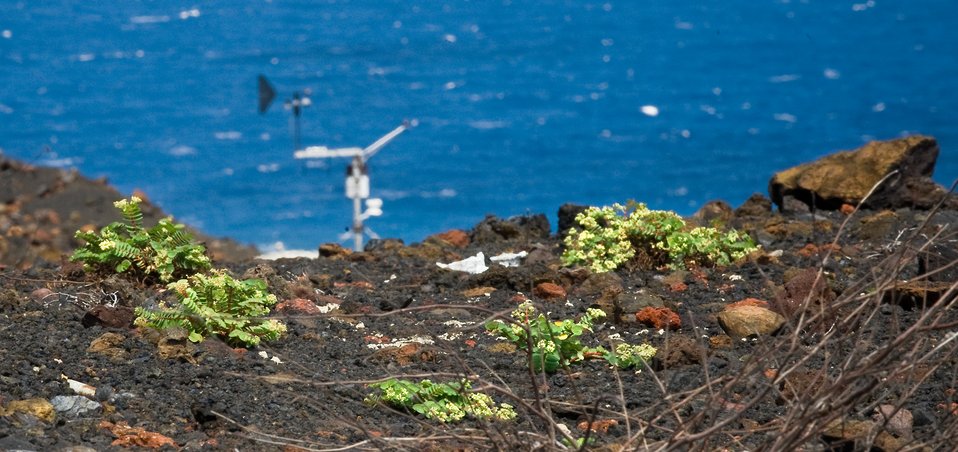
Robert's Plants

Ascension Spurge (E. origanoides), an endangered species of plant found only on the Ascension Island, predominantly on the property used by the 45th Operations Group, Detachment 2, Ascension Auxiliary Airfield (AAF), in the South Atlantic Ocean. These green leafed red stemmed plants are growing wild near a roadway hairpin turn, halfway up a hill. In the background is a weather station that records environmental conditions for the nearby spurge. Ongoing studies by the Computer Sciences Raytheon contract environmental engineering associates have taught them that this endemic plant survives best in these remote locations. Understanding the weather can help choose better locations and conditions to replant and promote growth of this small plant. Evasive plants compete for space that the spurge needs to establish itself in and send roots deep into the rocky soil. Although, all U.S. Air Force bases have environmental programs, this small remote island environment allows easy observation of the efforts supporting the endangered spurge plant and self-sufficient water, power and waste programs.